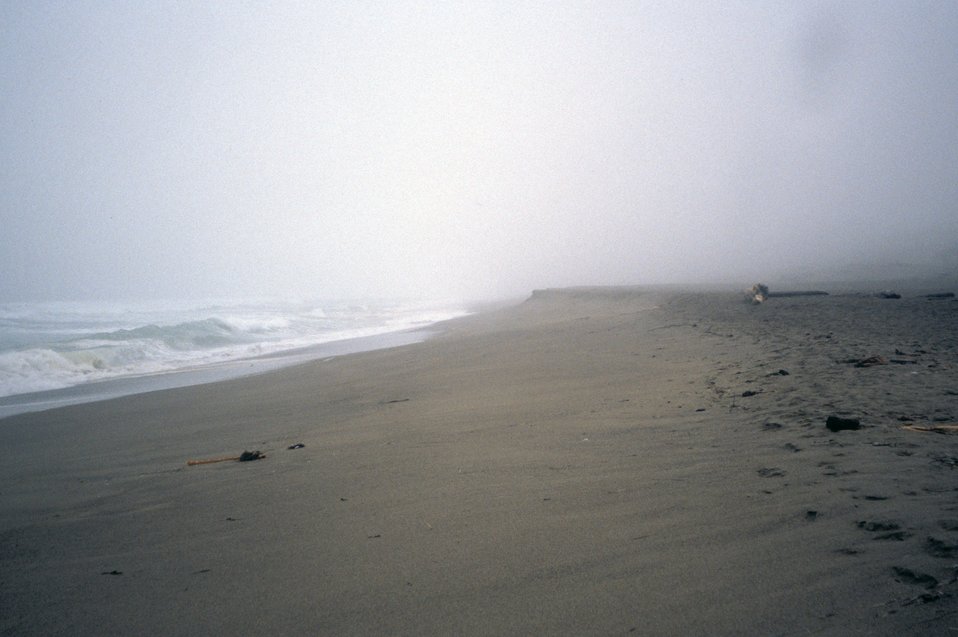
Point Reyes Great Beach. A misty foggy day.